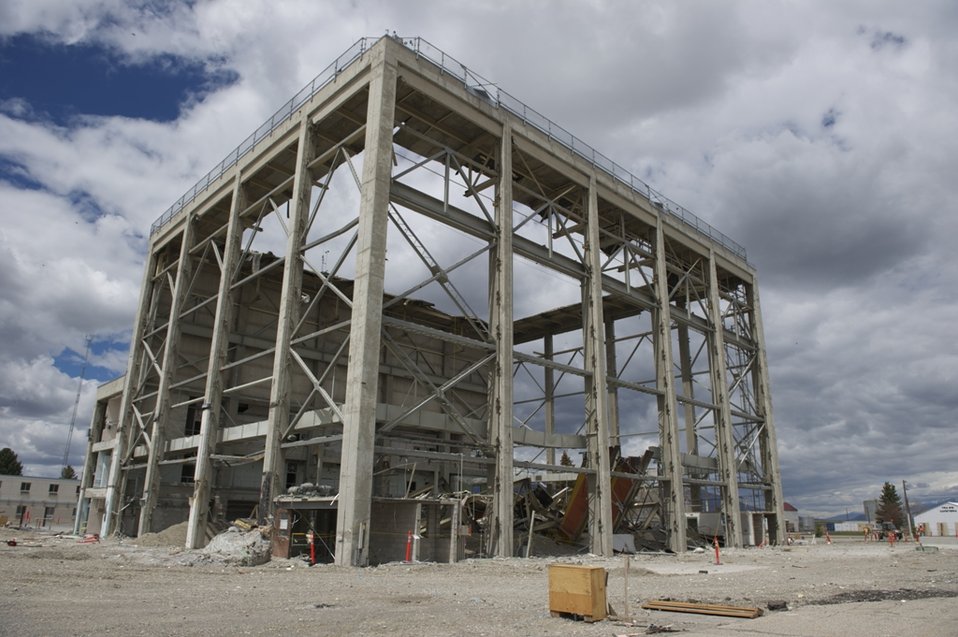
Idaho demolition

Workers demolished the 1.2 million-pound roof of the building that housed the historic Materials Test Reactor.